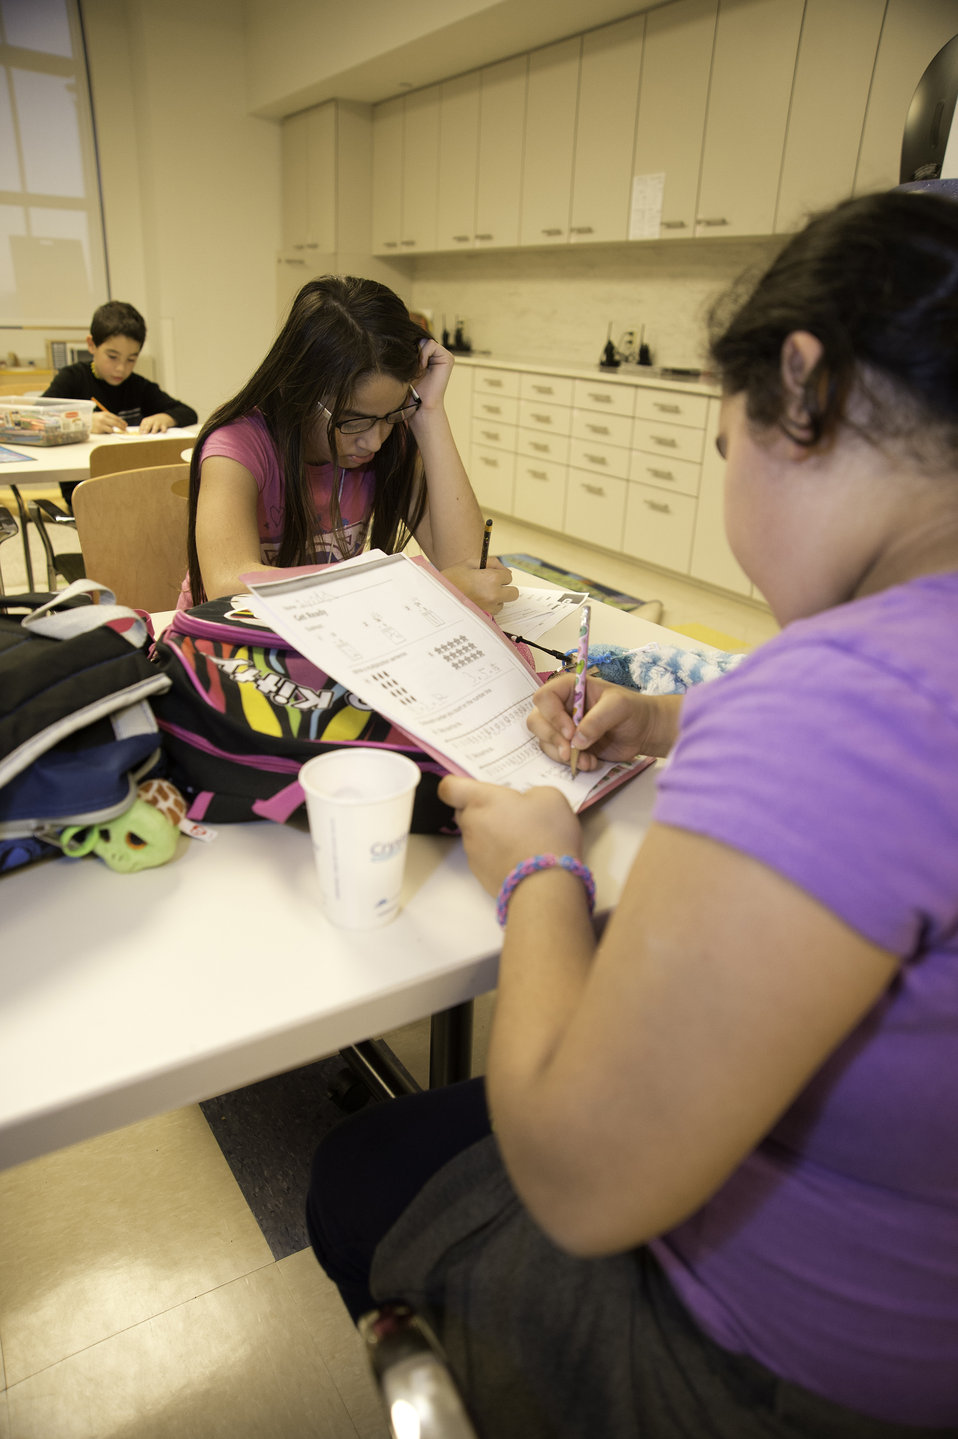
Mohegan youth enrolled in after-school program work on their schoolwork and receive extra help at the Mohegan Tribe Community Center and Government Building in Uncasville, CT on Nov. 18, 2013. A U.S. Department of Agriculture (USDA) Rural Development (RD) Community Facility Loan was provided to the Mohegan Tribe for the construction of the Mohegan Tribe Community Center and Government Building in Uncasville, CT. USDA’s RD Community Facilities Programs makes and guarantees loans to develop essential community facilities in rural areas and towns of up to 20,000 in population. Loans and guarantees are available to public entities such as municipalities, counties, parishes, boroughs, and special-purpose districts, as well as to non-profit corporations and tribal governments. The 160,000 square foot building Center hosts an exhibit celebrating federal recognition, history of Mohegan Chiefs, a new Library and Archives space, new Arts and Crafts room, a new gymnasium, and a new community room to enjoy food and family. The Center will continue the Tribe’s plan for growth and meeting the needs of its members.